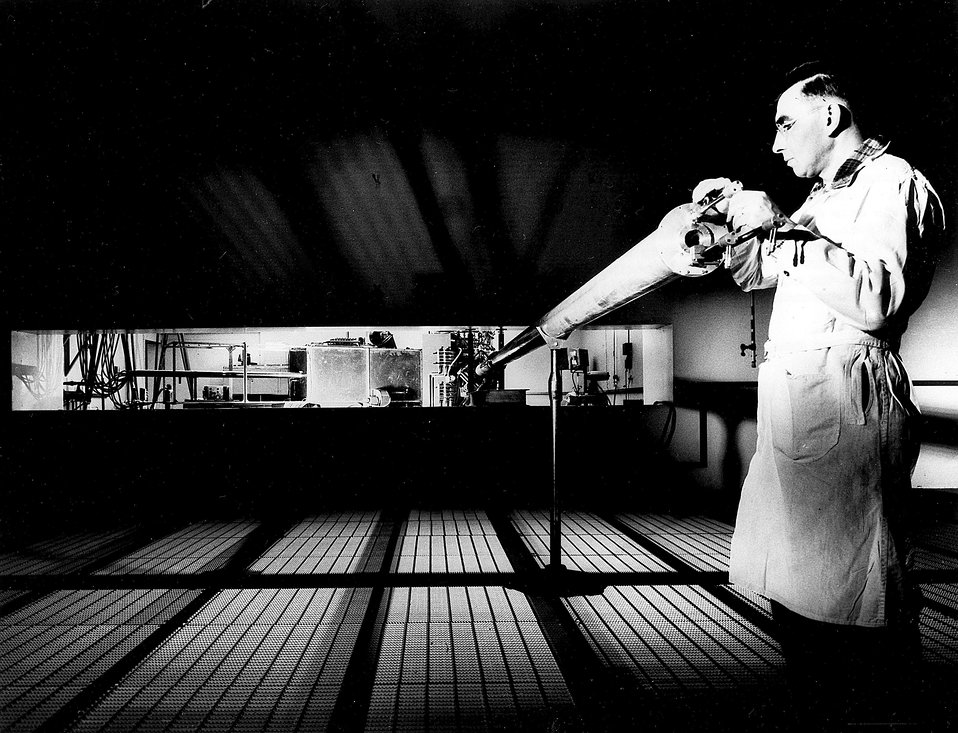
The 18-inch cyclotron, with its 30-foot beam pipe in the foreground.